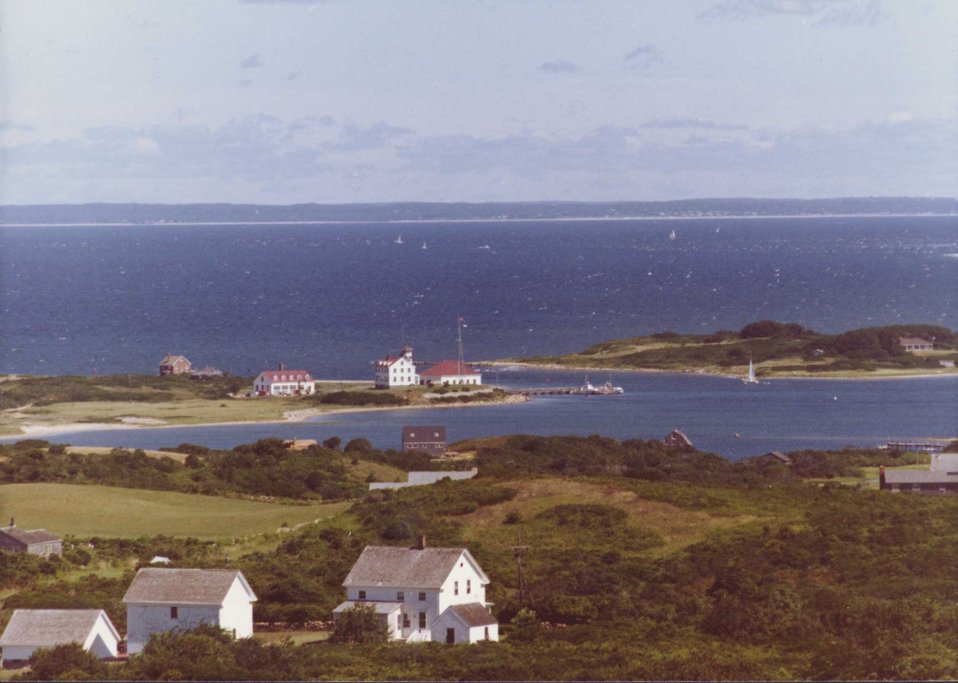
Long Island Sound from the old Weather Bureau building on Block Island.